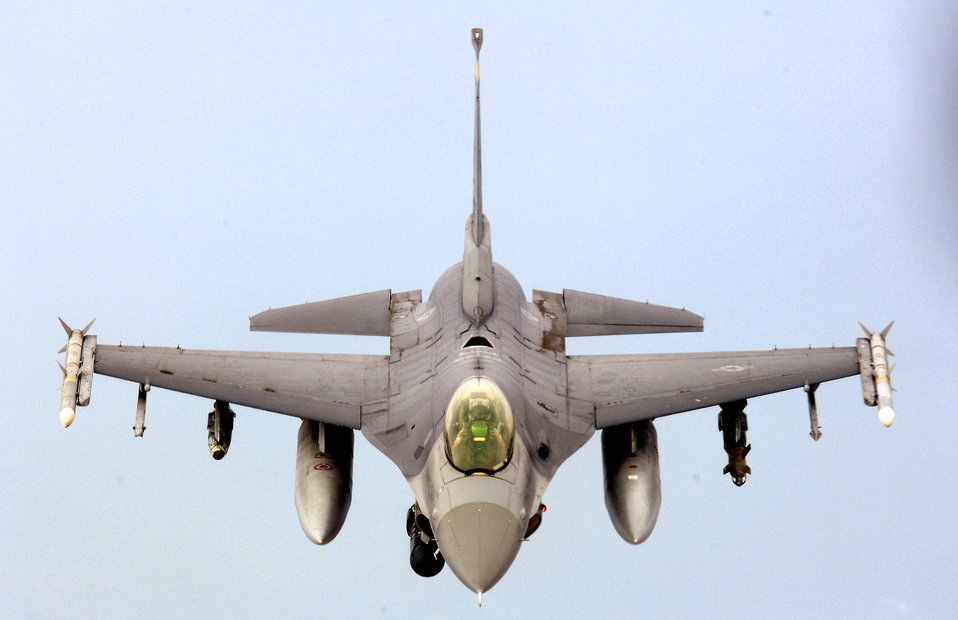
Close-air-support mission

An F-16 Fighting Falcon flies a close-air-support mission over Iraq on Sunday, May 7, 2006. The F-16, from Hill Air Force Base, Utah, is deployed to Balad Air Base, Iraq, in support of Operation Iraqi Freedom.